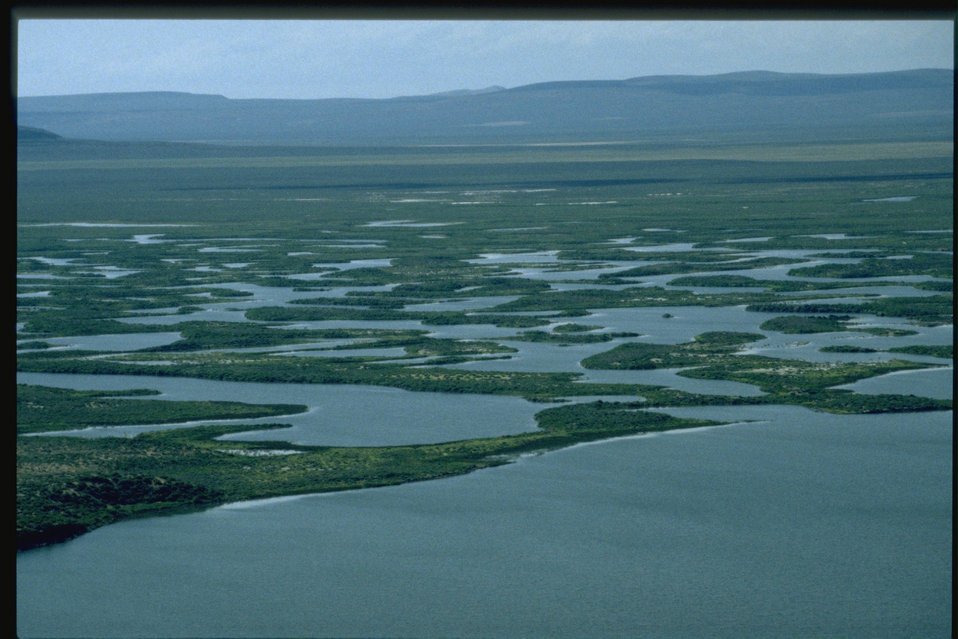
Warner Wetlands.